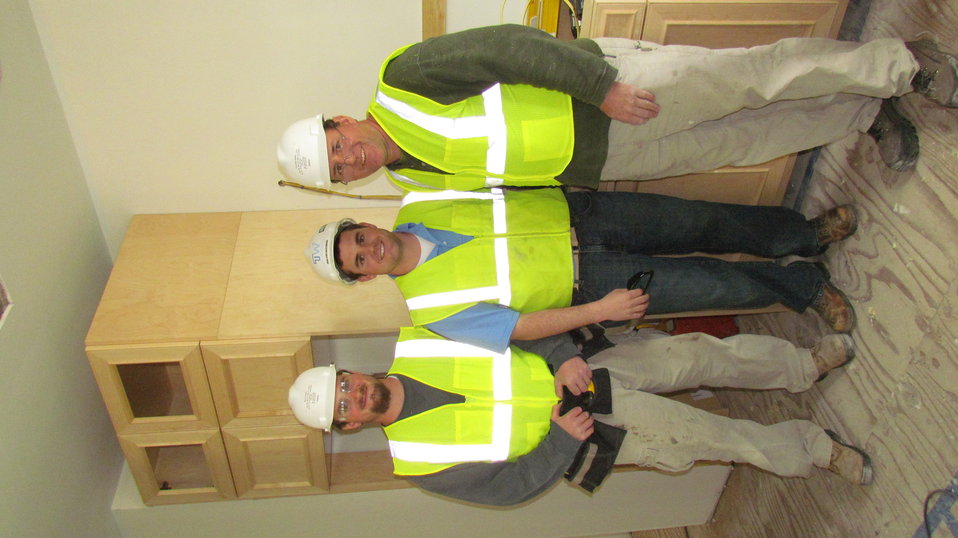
Photograph of building construction superintendant Neil Dehl and co-workers.